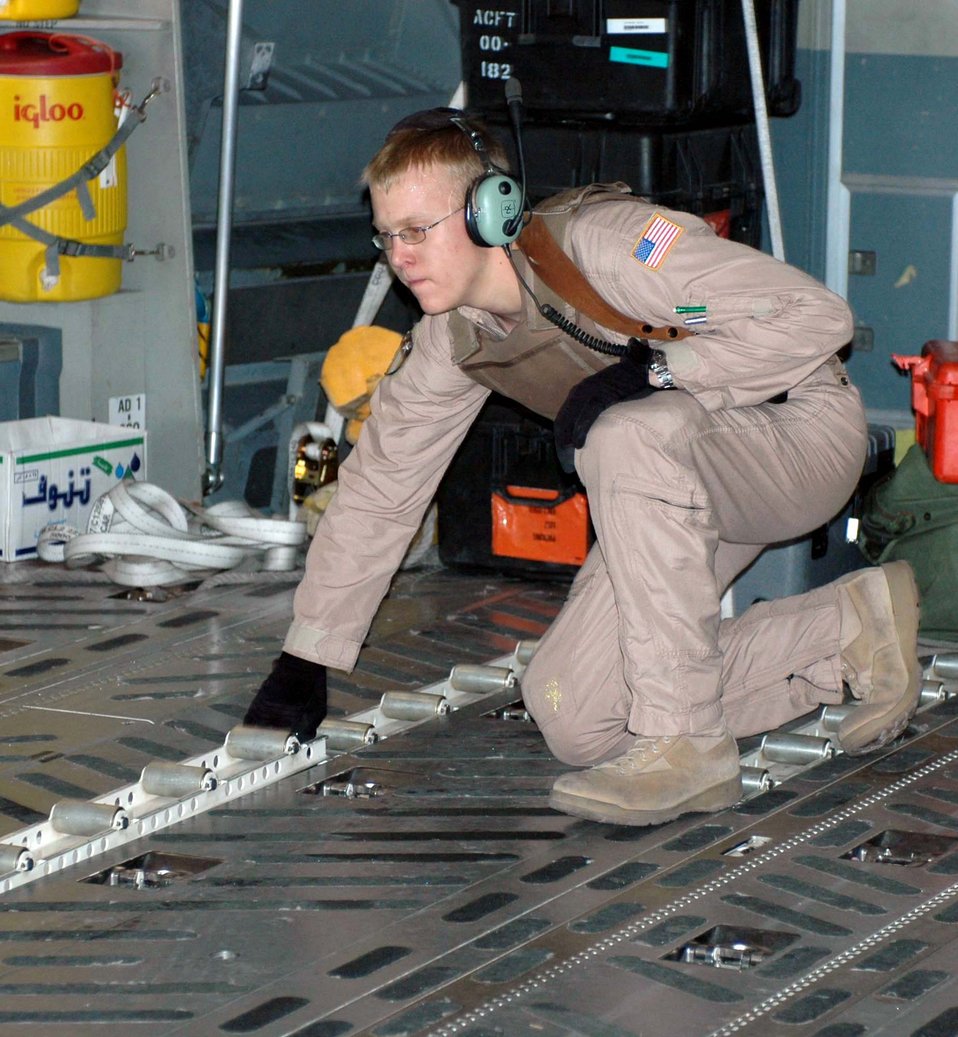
Global missions all in a day's work

Airman 1st Class Cole Bertolozzi prepares a C-17 Globemaster III cargo hold at Bagram Air Base, Afghanistan, on Aug. 8. As a loadmaster, Airman Bertolozzi is responsible for ensuring the cargo and passengers are loaded onto the aircraft correctly and safely. He is deployed from the 10th Airlift Squadron at McChord Air Force Base, Wash.